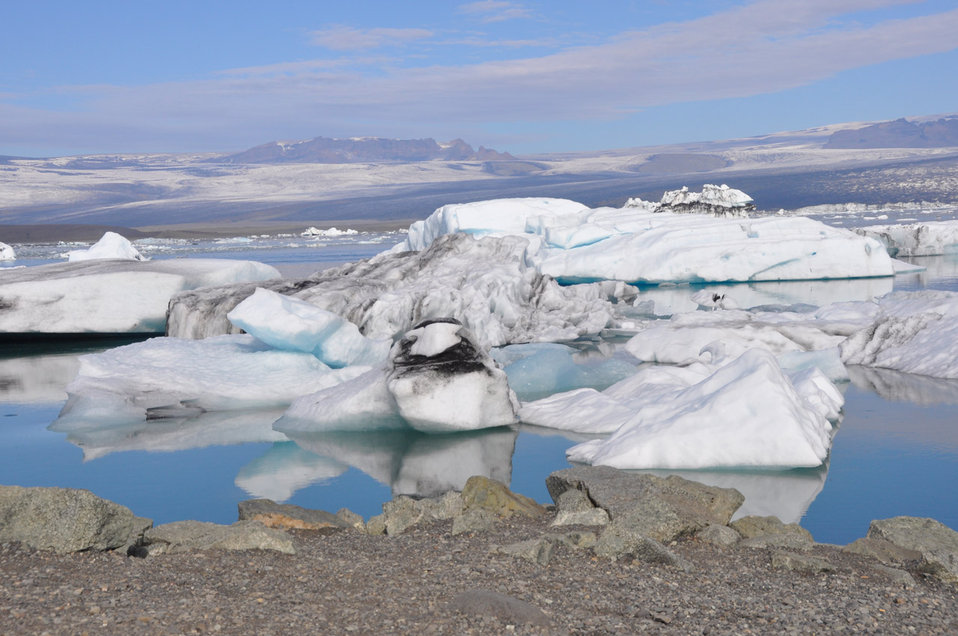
Glacier

Icelandic glacier flowing down to the sea.